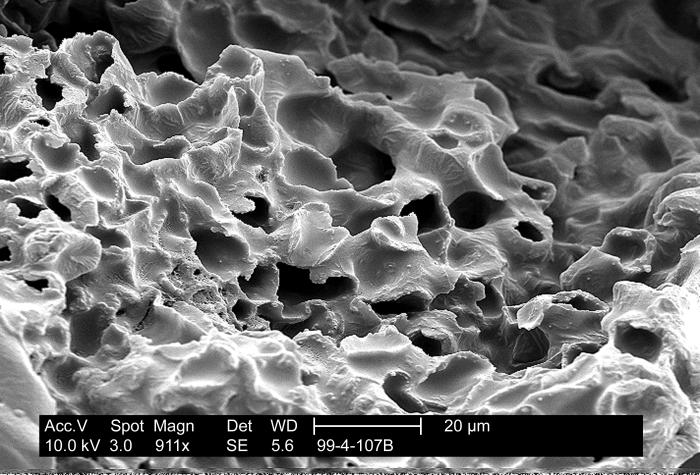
This scanning electron micrograph (SEM) reveals the textured surface of a parsley leaf using a magnification of 911x.